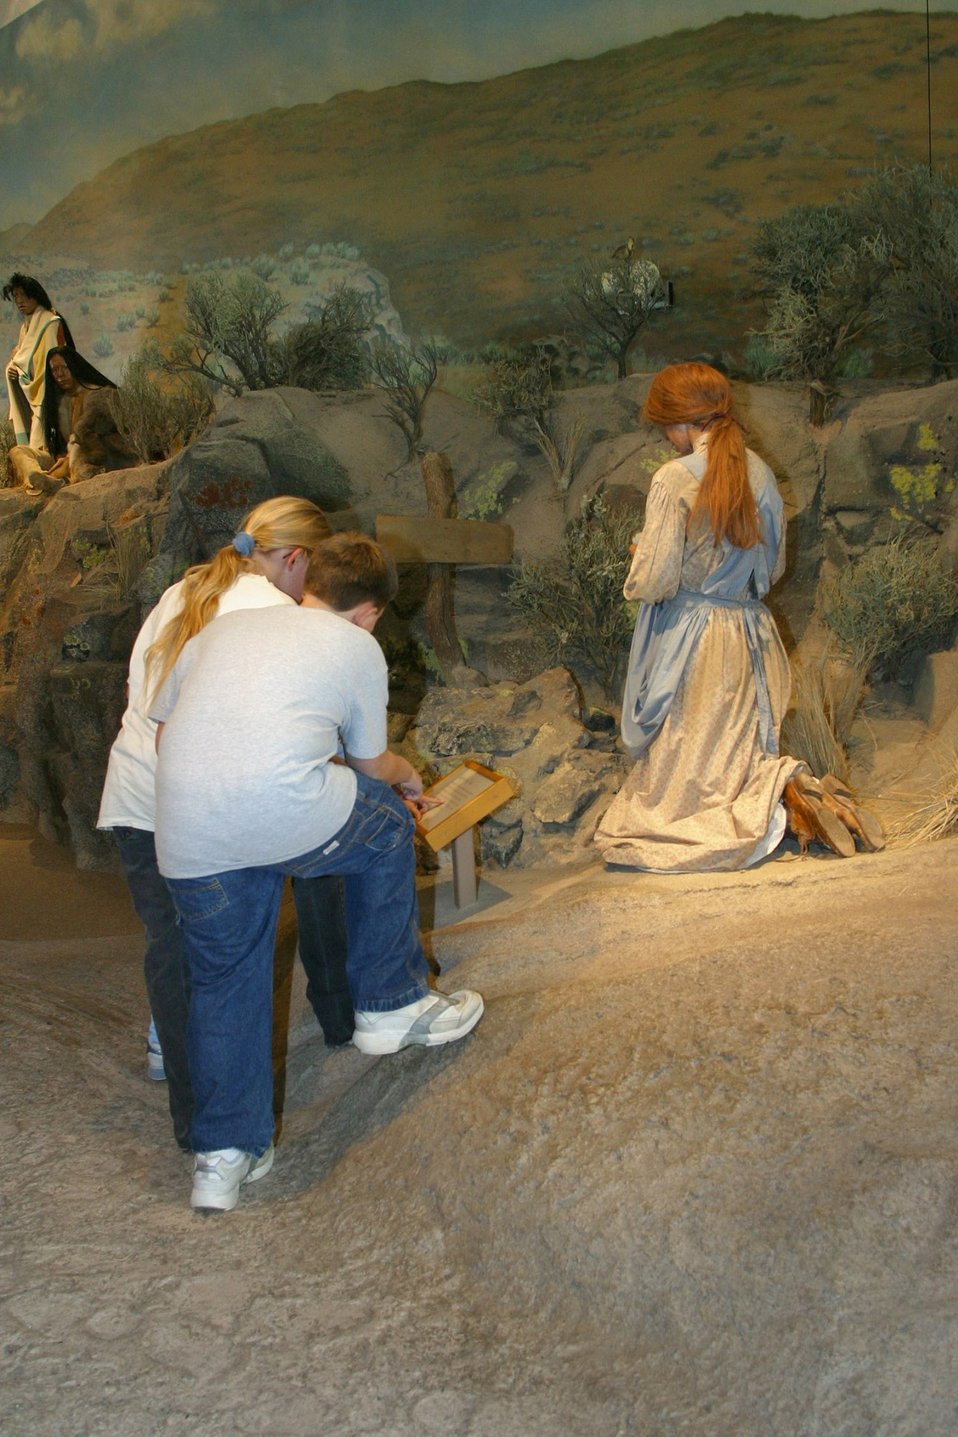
Hundreds of school children visit the National Historic Oregon Trail Interpretive Center every year.